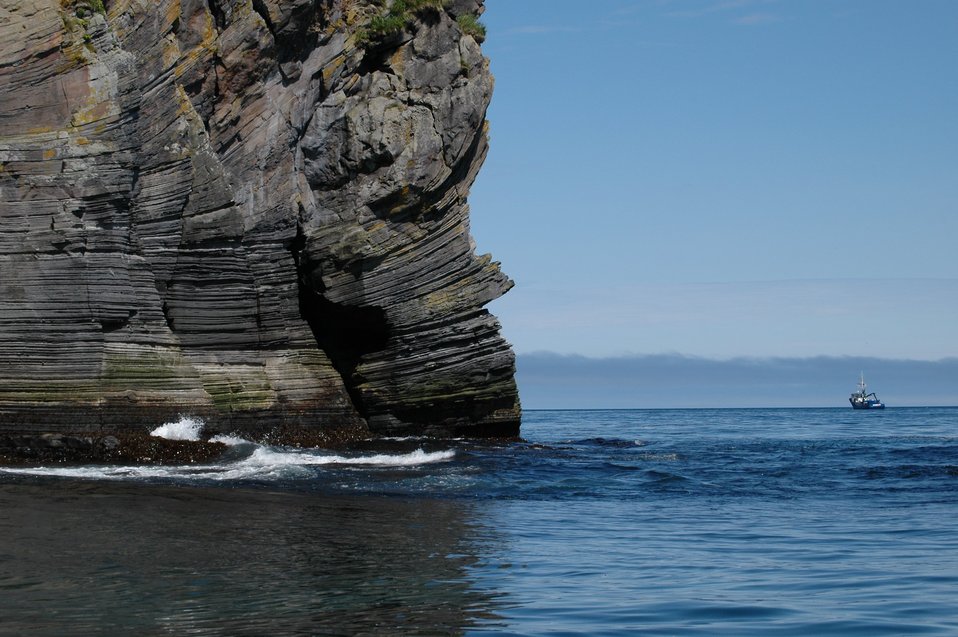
Unique rock formation